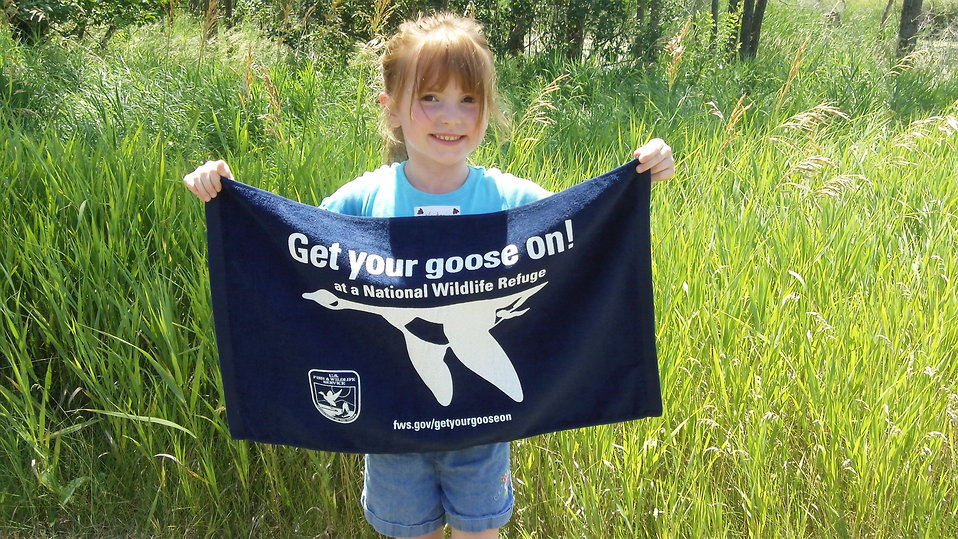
Get Your Goose On!

Photo taken at Huron Wetland Management District in east-central South Dakota.